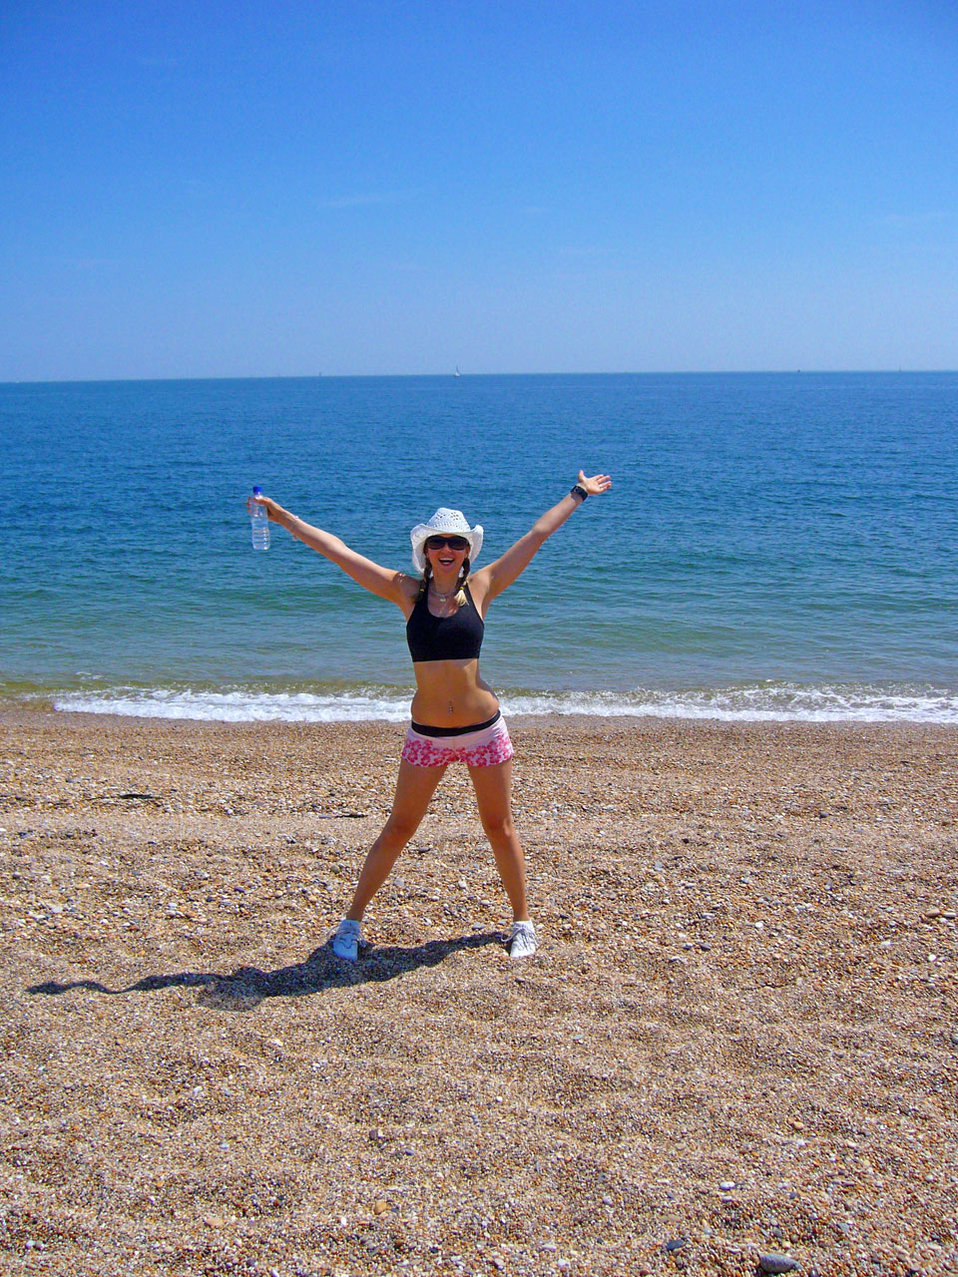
Great time

Girl on the beach.